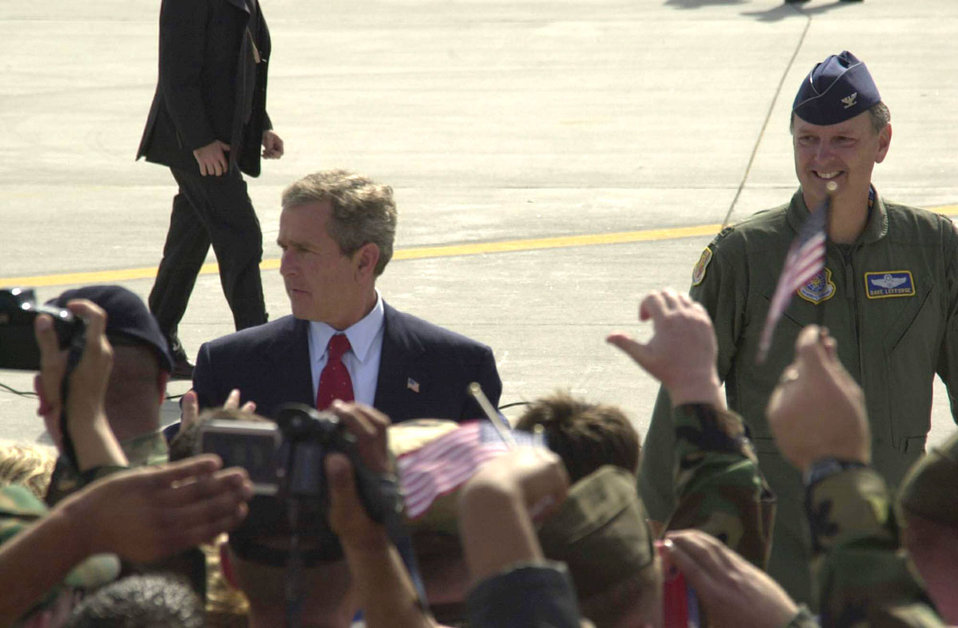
Commander-in-Chief

TRAVIS AIR FORCE BASE, Calif. -- President George W. Bush greets people here, during his visit Oct. 17, 2001 as Col. David Lefforge, 60th Air Mobility Wing commander, looks on.